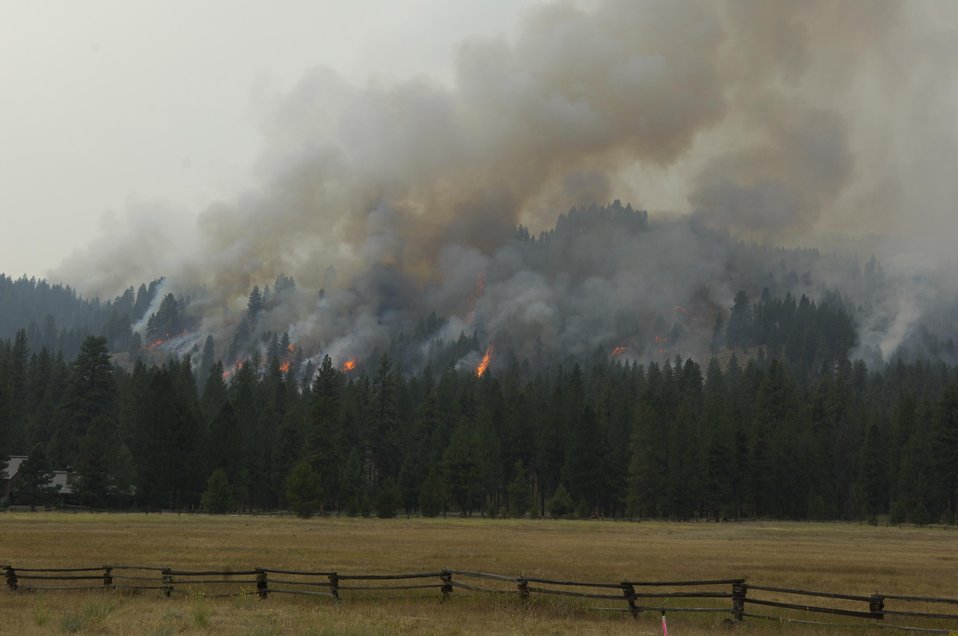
The Little Queens Fire in Boise National Forest near Atlanta, ID began on Aug. 17, 2013 is under investigation. The fire has consumed approximately 20,956 acres and is 10% contained.